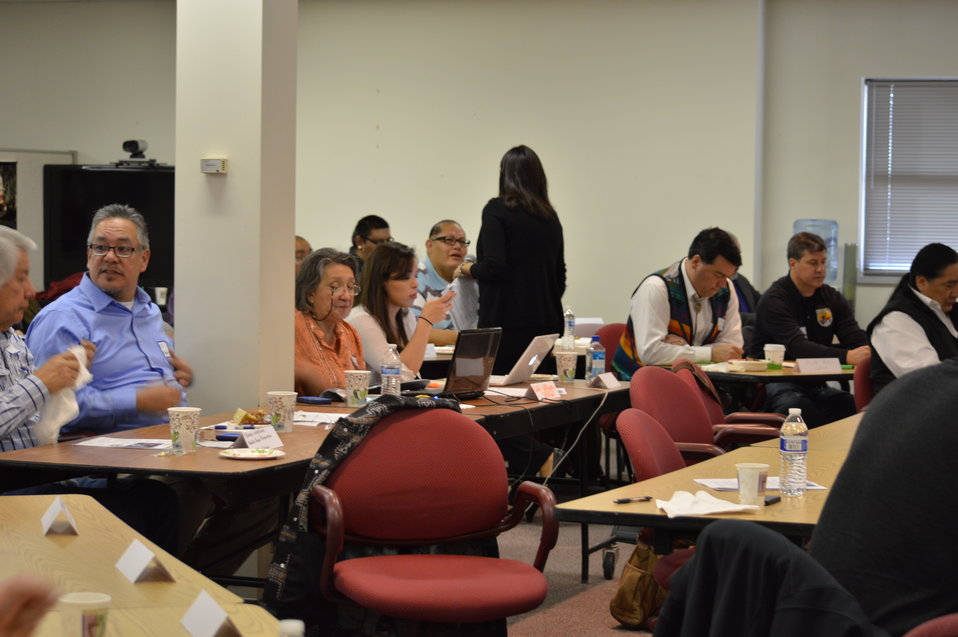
Eagle Summit III

Attendees at the Eagle Summit III in Denver, Colorado on March 20, 2014 at the Rocky Mountain Arsenal National Wildlife Refuge.